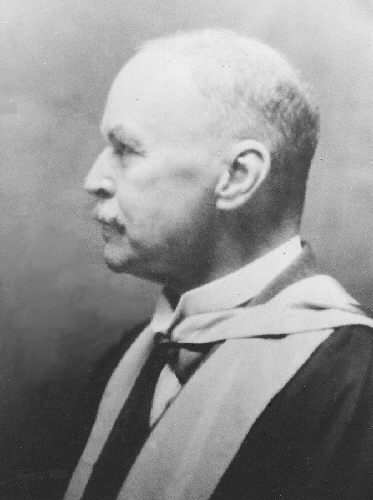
Ronald Ross